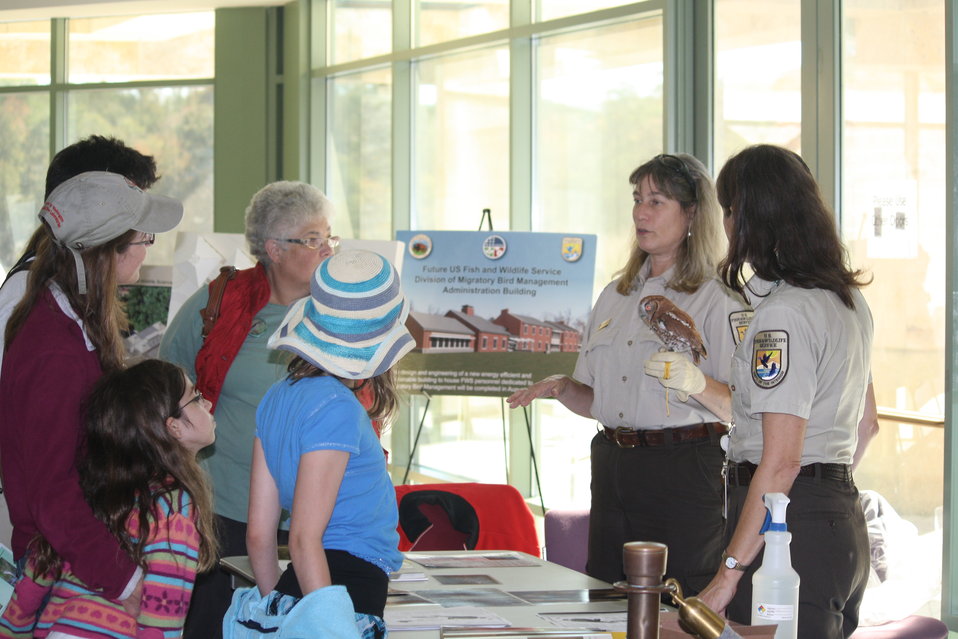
Patuxent Research Refuge 75th Anniversary

Refuge staff present an Eastern Screech Owl and a Kestrel at the Patuxent 75th Anniversary.